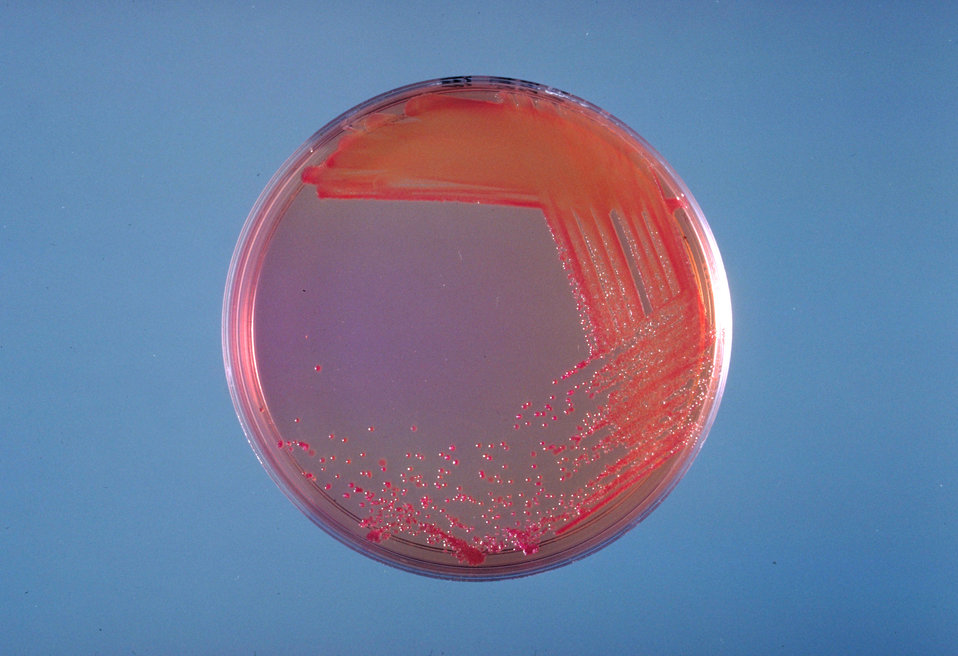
This is a MacConkey agar plate culture of Enterobacter sakazakii after 24 hours of growth at 36� C.